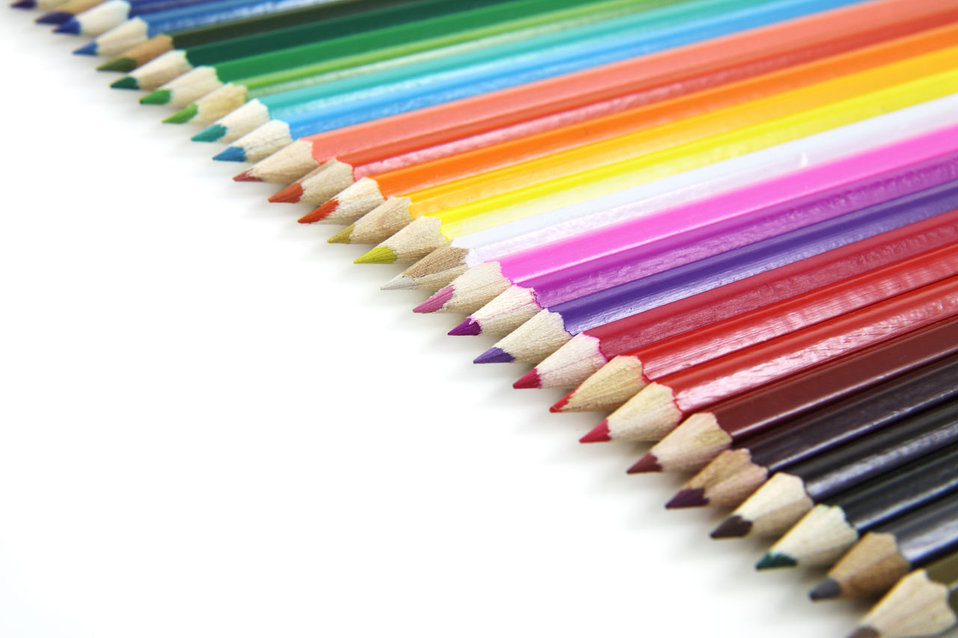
Colored pencils on white background.